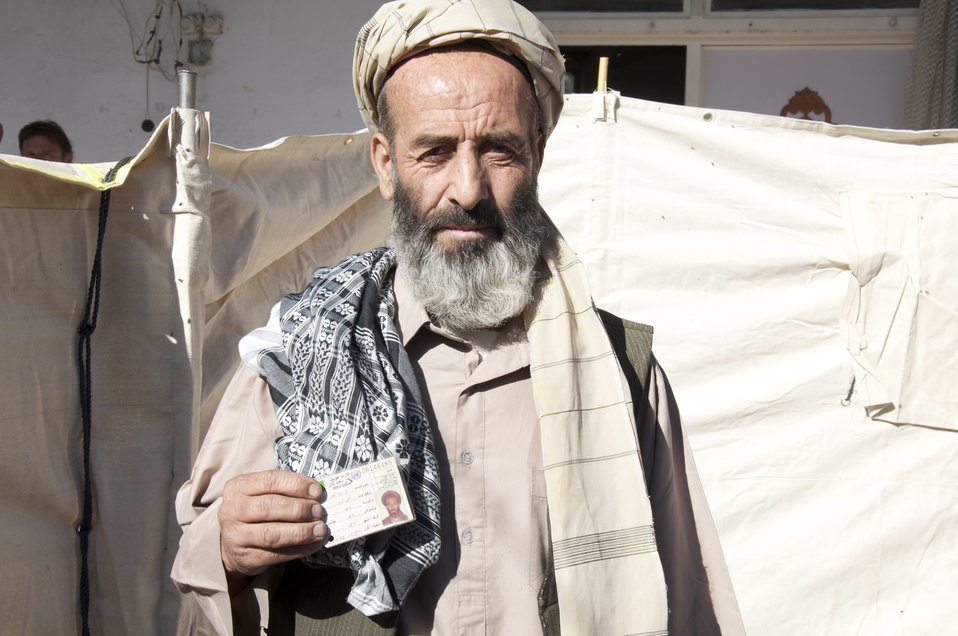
Voting Card